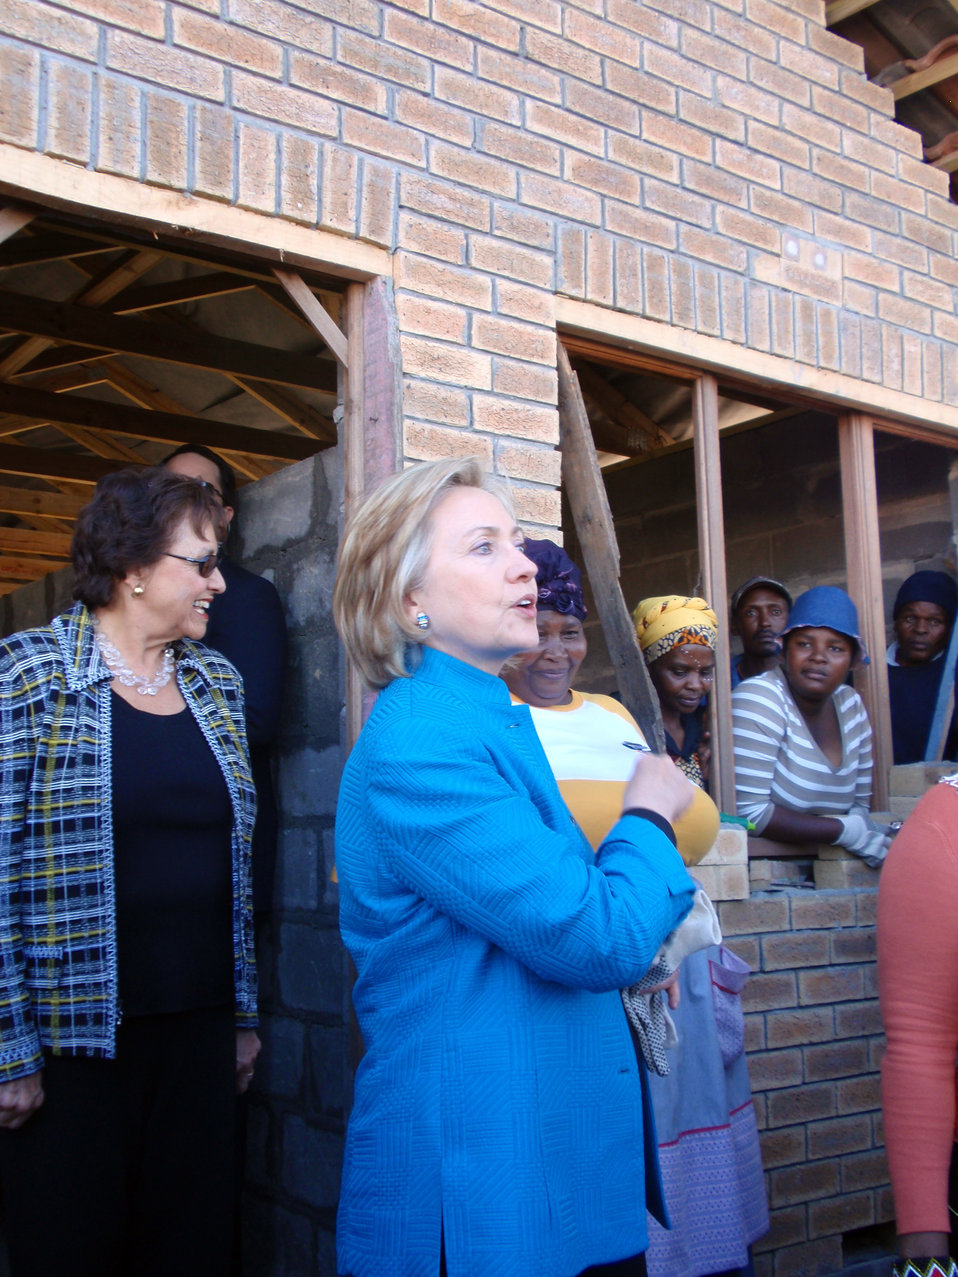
Secretary Clinton Visits Victoria Mxenge Housing Development

U.S. Secretary of State Hillary Rodham Clinton visits construction site at the Victoria Mxenge Housing Development in Cape Town, South Africa August 8, 2009.